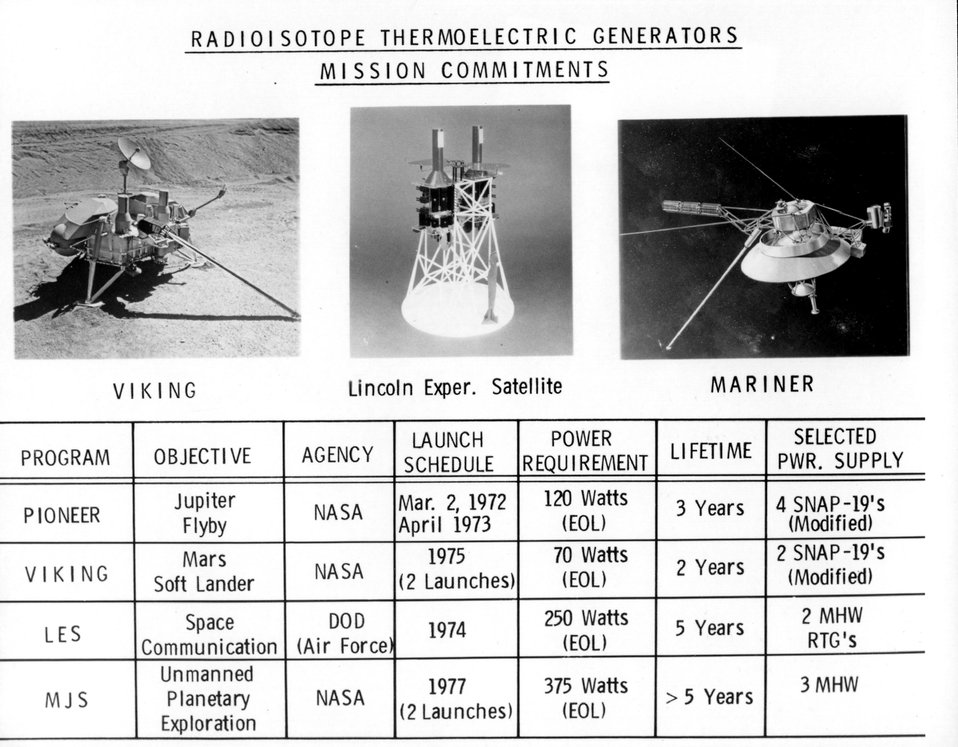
Radioisotope Thermoelectric Generators Mission Commitments. c. 1974